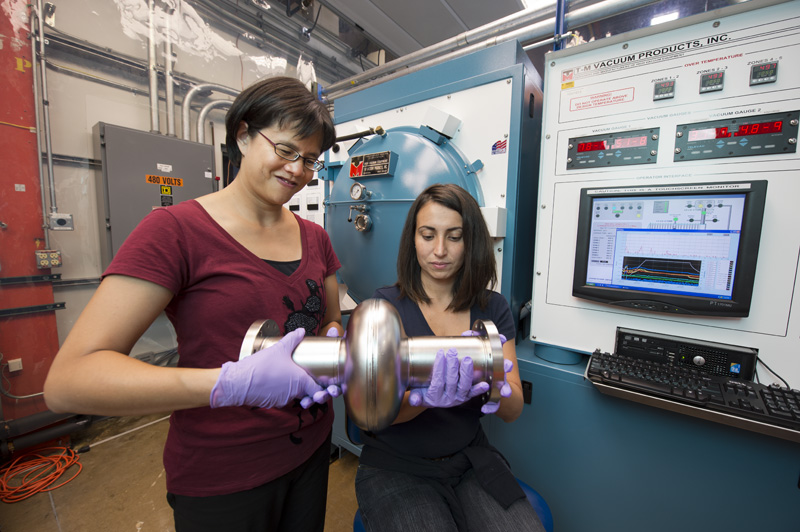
Mayling Wong-Squires is a Mechanical Engineer at Fermi National Accelerator Laboratory. She is currently working in the SRF Development Department of the Technical Division, working closely with scientists in the research and development of optimizing the performance of superconducting radio frequency cavities for future particle accelerators such as Project X. Mayling is the responsible engineer overseeing the infrastructure that bakes the cavities at various temperatures as part of cavity processing. She is also helping in the engineering of the new Vertical Test Stands that test the cavities at cryogenic temperatures. Past projects where she has worked include BTeV, NuMI, and CDF.

Read her full story at energy.gov/diversity/articles/women-energy-mayling-wong-s...